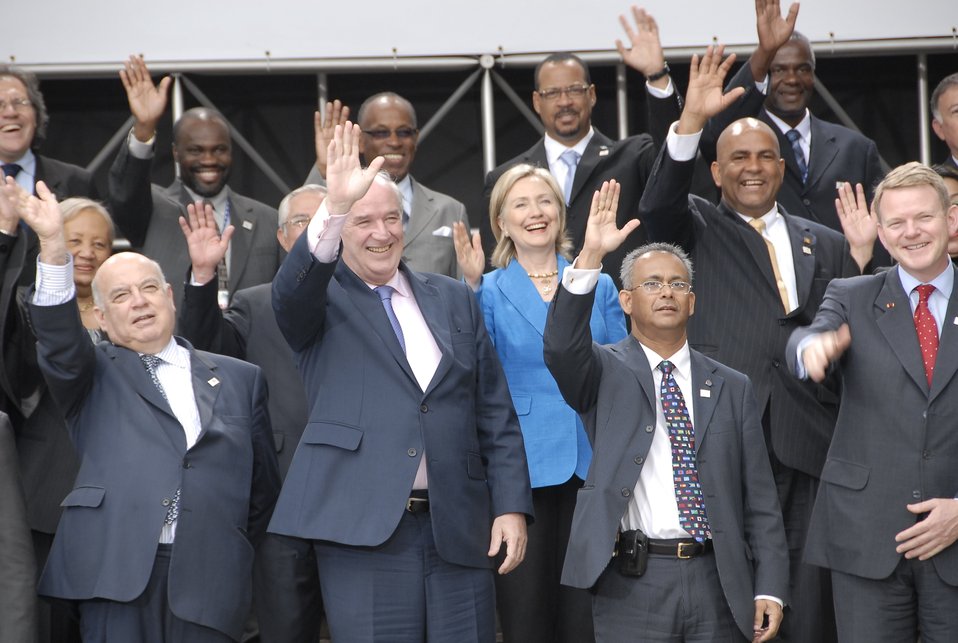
Secretary Clinton With OAS Ministers

U.S. Secretary of State Hillary Rodham Clinton, flanked by Peruvian Foreign Minister Jose Garcia Belaunde and Secretary General of the OAS Jose Miguel Insulza, poses for a photo with other ministers at the 40th General Assembly of the Organization of American States in Lima, Peru, on June 7, 2010.